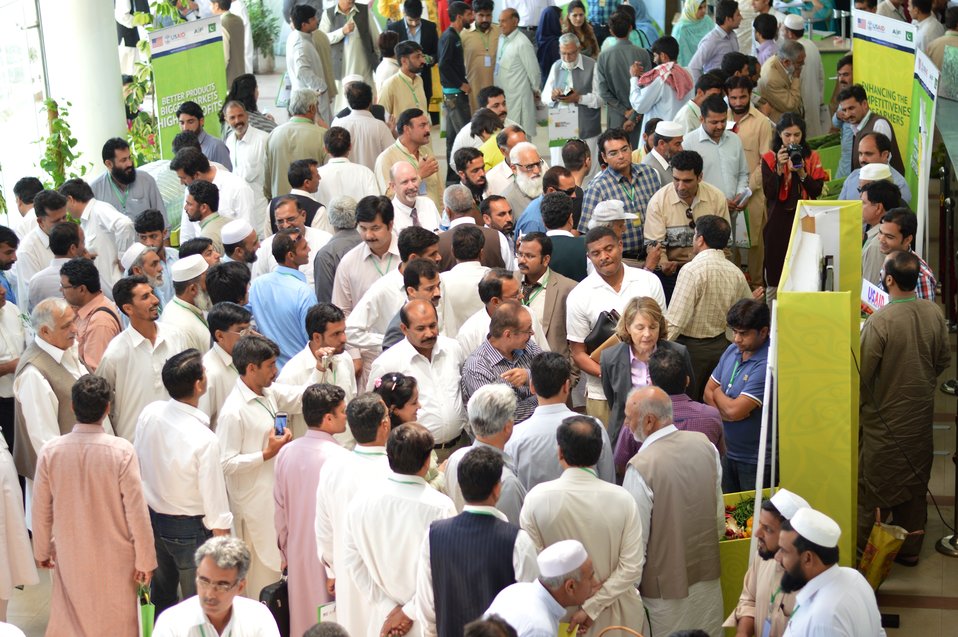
Picture (6) Pakistan vegetable Fair 2014 Islamabad May 15 2014